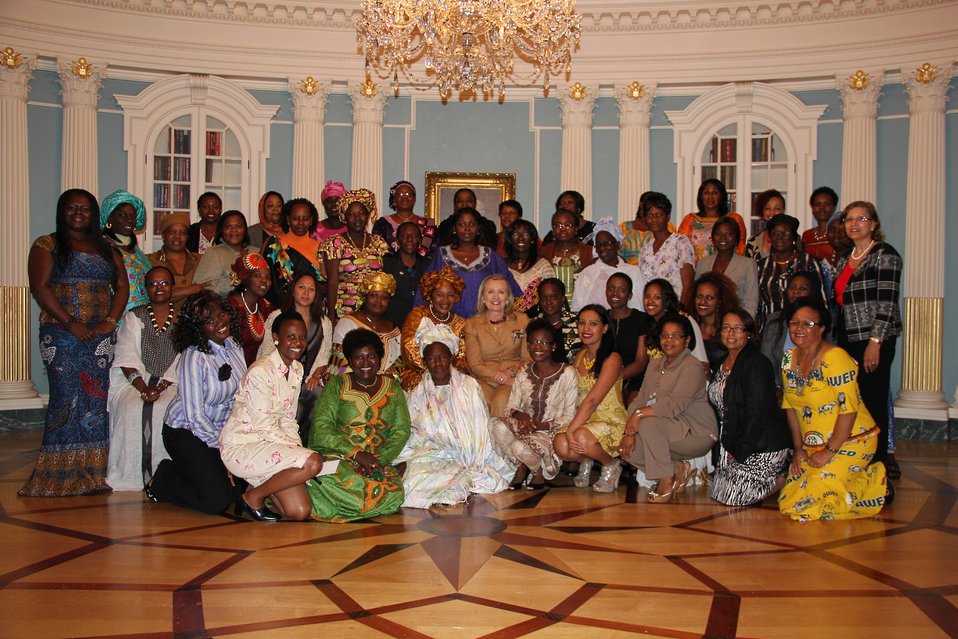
Secretary Clinton Poses for a Group Photo With the African Women's Entrepreneurship Program Participants

U.S. Secretary of State Hillary Rodham Clinton poses for a group photo with the participants in the African Women's Entrepreneurship Program at the Department of State in Washington, D.C. on June 14, 2012.